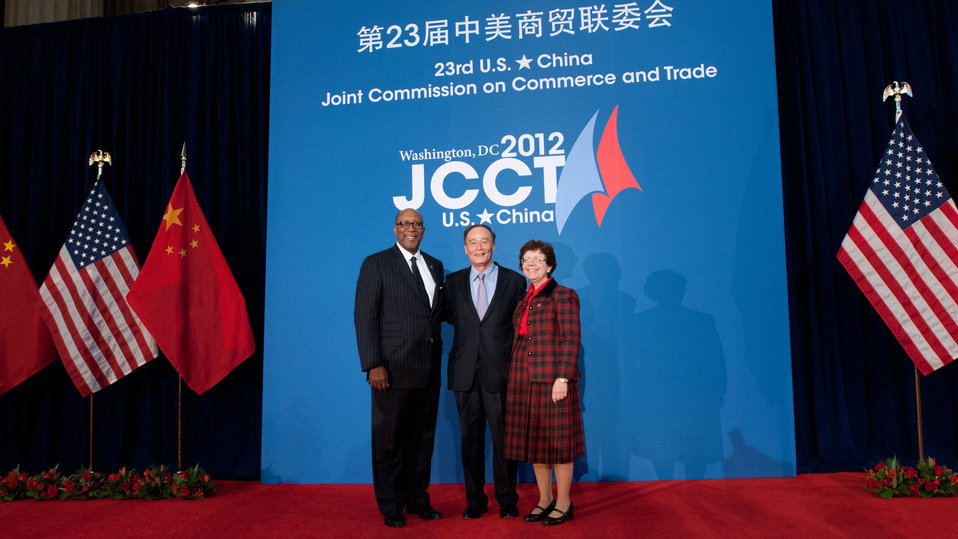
(L to R) U.S. Trade Representative Ron Kirk, Chinese Vice Premier Wang Qishan, and Acting U. S. Commerce Secretary Rebecca Blank arrive at the 23rd Session of the U.S. China Joint Commission on Commerce and Trade (JCCT) at the Andrew W. Mellon Auditorium in Washington, D.C. on Wednesday, Dec. 19, 2012. The JCCT holds high-level plenary meetings on an annual basis to review progress made by working groups that focus on a wide variety of trade issues. These working groups meet throughout the year to address topics such as intellectual property rights, agriculture, pharmaceuticals and medical devices, information technology, tourism, commercial law, environment, and statistics. Established in 1983, the JCCT is the main forum for addressing bilateral trade issues and promoting commercial opportunities between the United States and China. The 2011 JCCT meeting was held in Chengdu, China, where China agreed, among other issues, to improve intellectual property enforcement, delink innovation policies to government procurement preferences, and provide a fair and level playing field in China’s Strategic Emerging Industries.